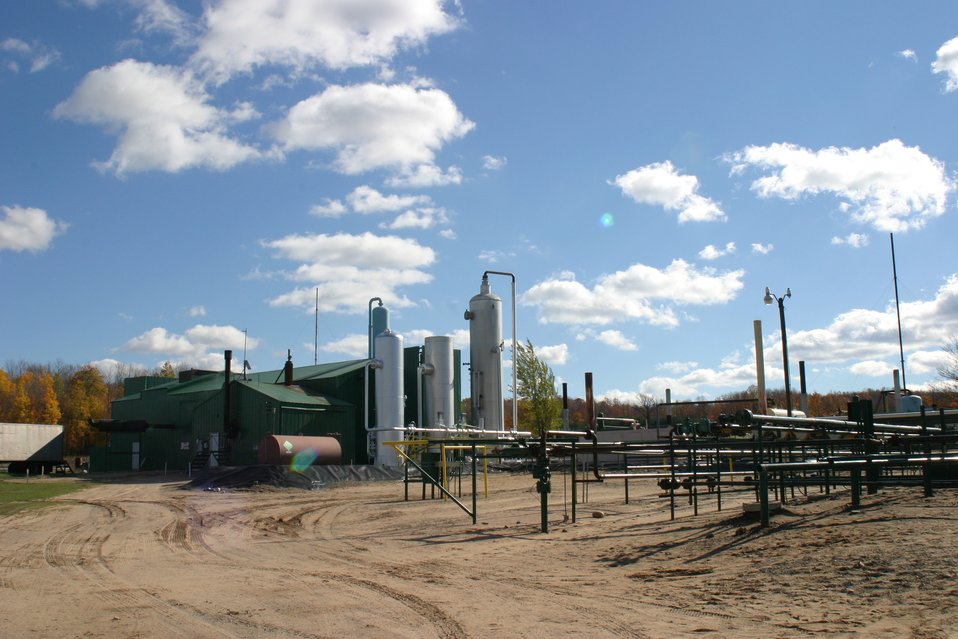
Enhanced oil recovery facility located in Gaylord, Michigan.